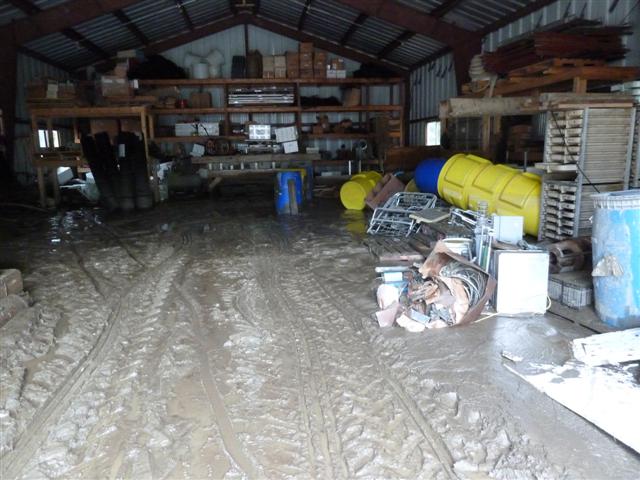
storage building interior (Small)

Damage to the storage building - interior